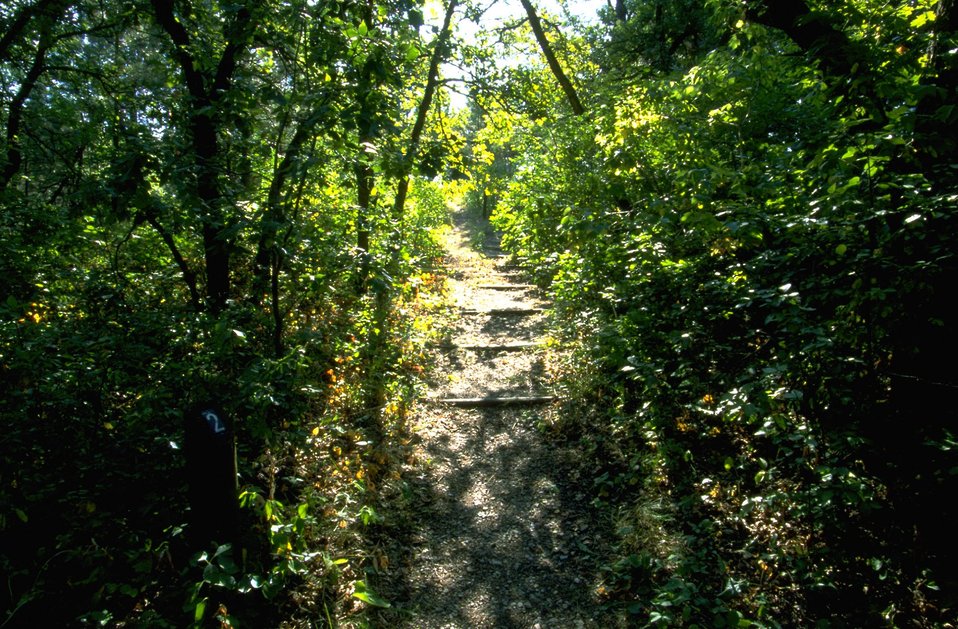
Nature Trail at Alkali Creek Trailhead at the south end of Fort Meade